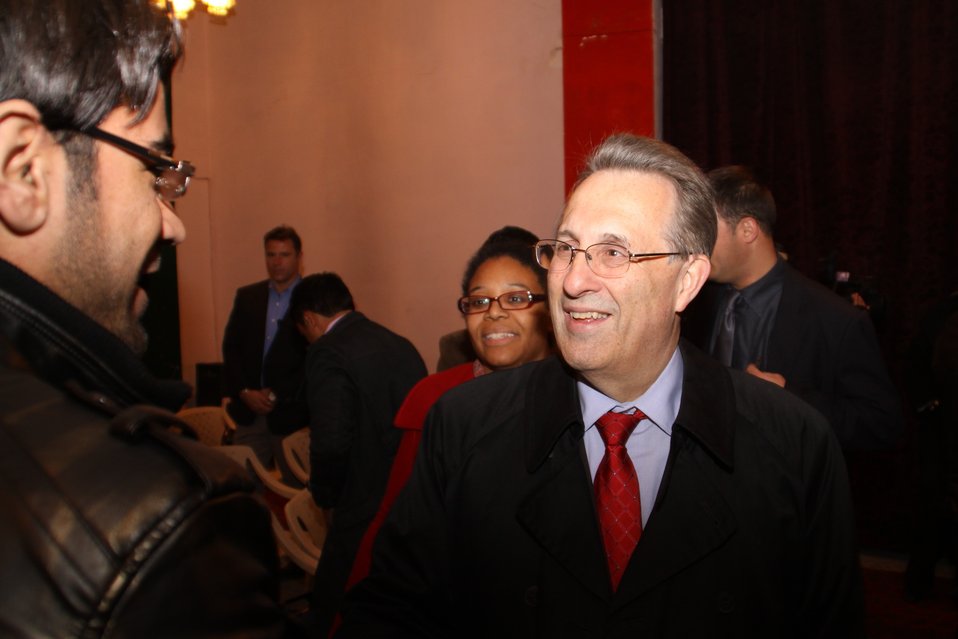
U.S. Ambassador E. Anthony Wayne